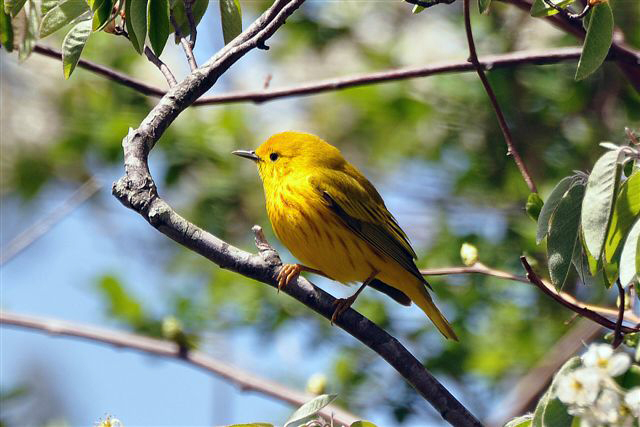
Photo of the Week - Yellow warbler at Trustom Pond Refuge (RI)

Photo of the Week - May 11, 2011

Yellow warbler in flowering apple tree at Trustom Pond National Wildlife Refuge, RI.